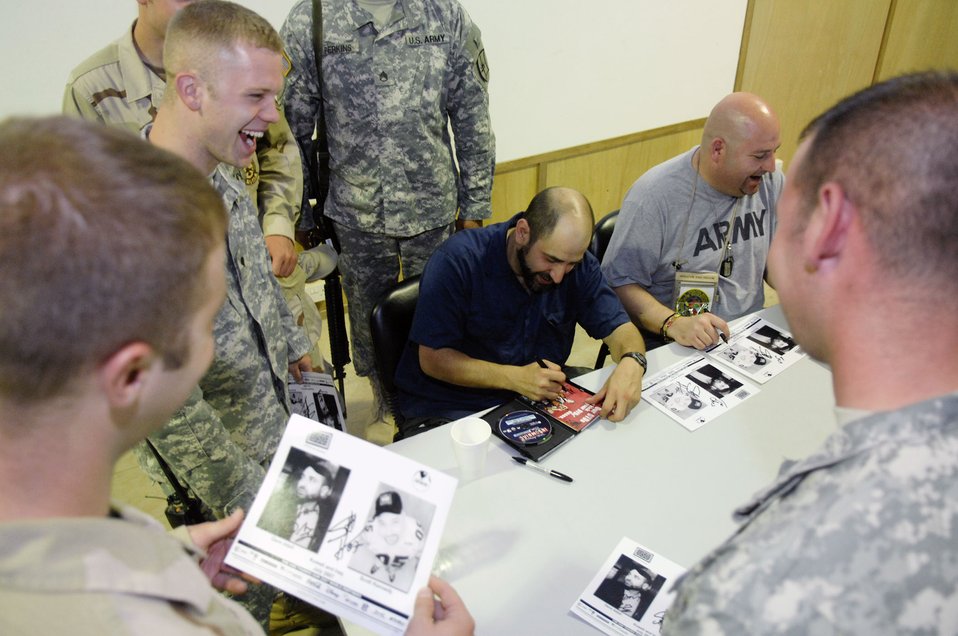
USO-sponsored show keeps 'em laughing

Comedians Dave Attell (center) and Scott Kennedy sign autographs after a USO show for more than 700 Soldiers and Airmen July 25 at Camp Adder, Iraq. This was the second of eight stops in theater for the tour. Mr. Attel is star of Comedy Central's